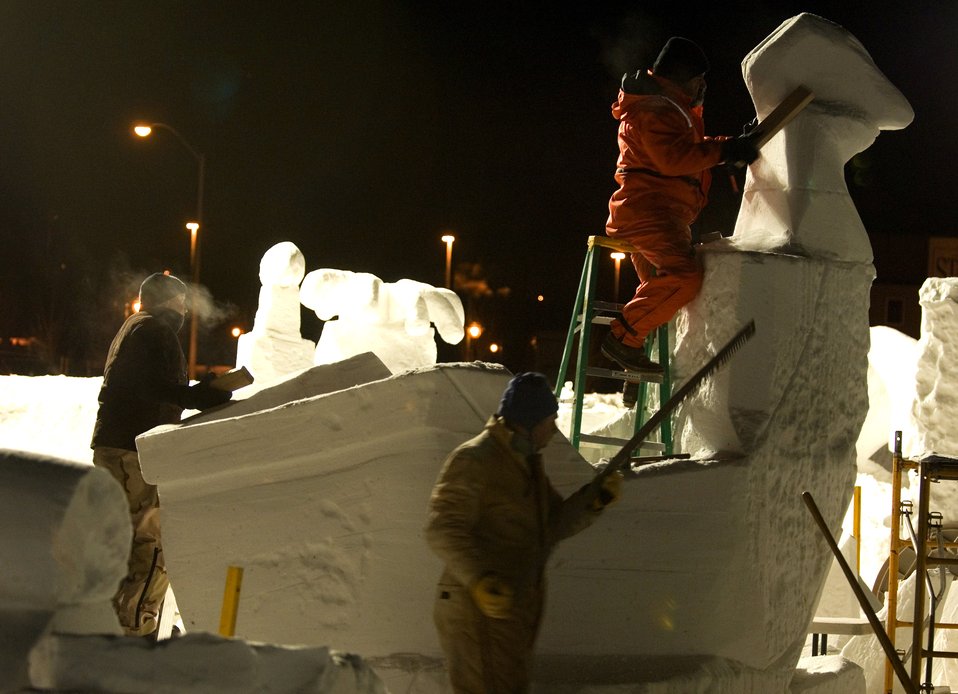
Elmendorf team perfects snow sculpting skills

Staff Sgt. Edward Tompkins, Eric Zimmerman and Mitchell Manzo, comprising the Elmendorf Air Force Base snow sculpting team, chop, saw and smooth away snow to create a pirate ship Feb. 23 during the Anchorage, Alaska, Fur Rendezvous snow sculpture competition. The team was vying for a chance to be invited to the 2008 National Snow Sculpting Championship in Lake Geneva, Wis.